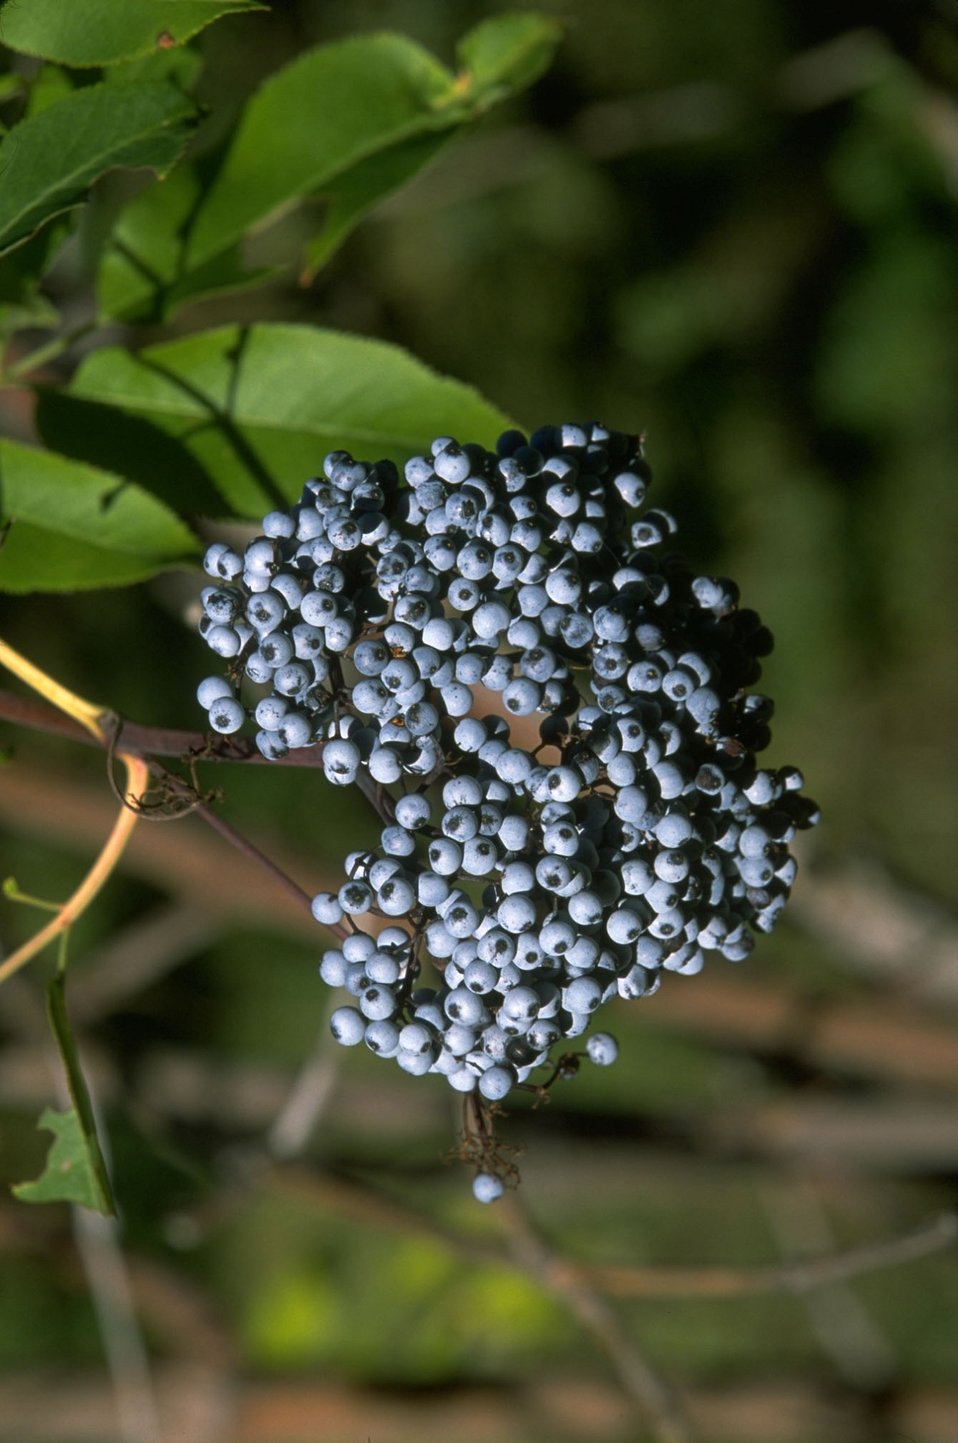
Closeup of Elderberry VERTICAL